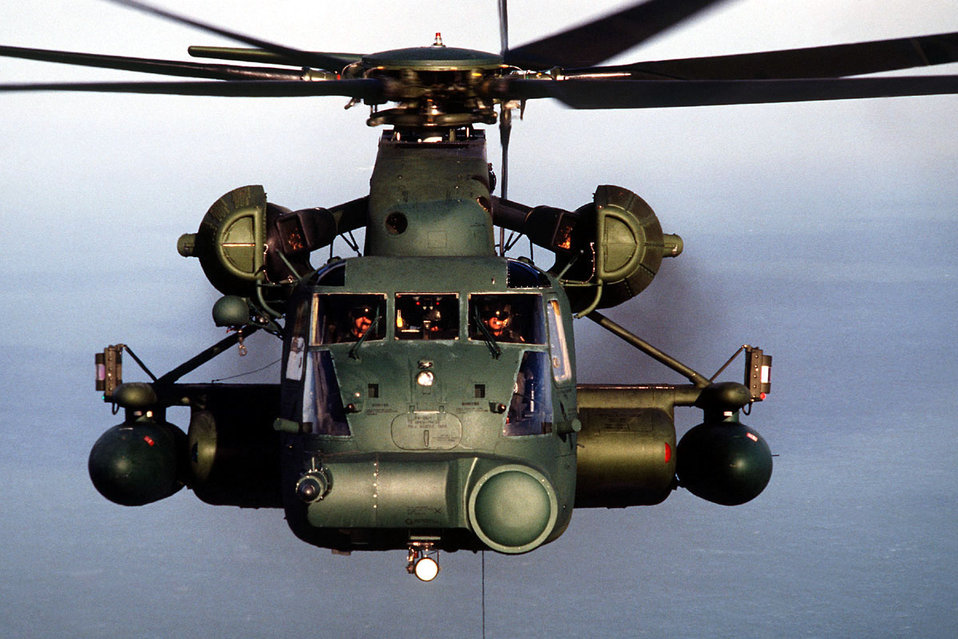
Pave Low III

FILE PHOTO -- The MH-53J Pave Low III heavy-lift helicopter is the largest, most powerful and technologically advanced helicopter in the Air Force inventory. The terrain-following and terrain-avoidance radar, forward-looking infrared sensor, inertial navigation system with global positioning system, along with a projected map display enable the crew to follow terrain contours and avoid obstacles, making low-level penetration possible.